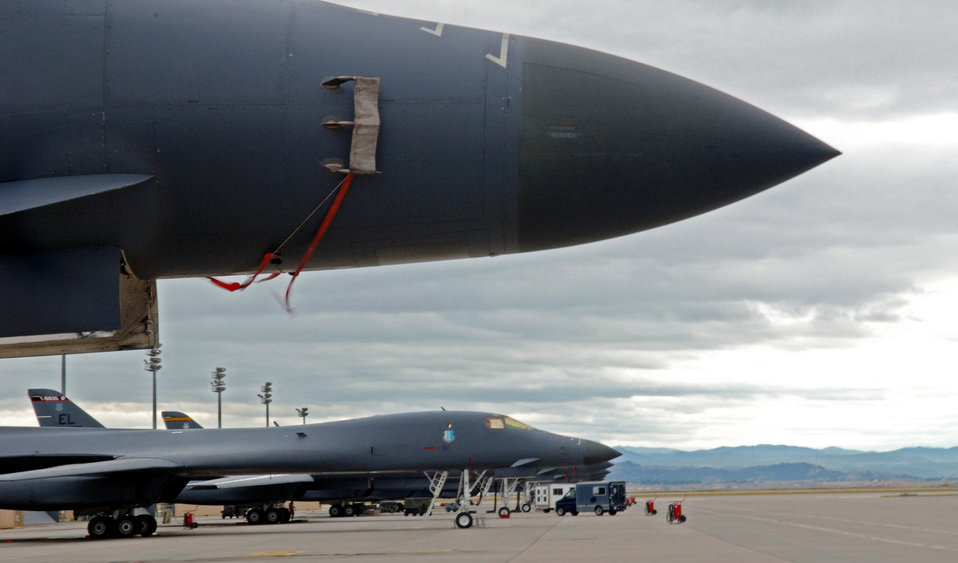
Ready to strike

B-1B Lancers line up on the flightline Aug. 19 at Ellsworth Air Force Base, S.D. The B-1 can rapidly deliver massive quantities of precision and non-precision weapons against any adversary, anywhere in the world.